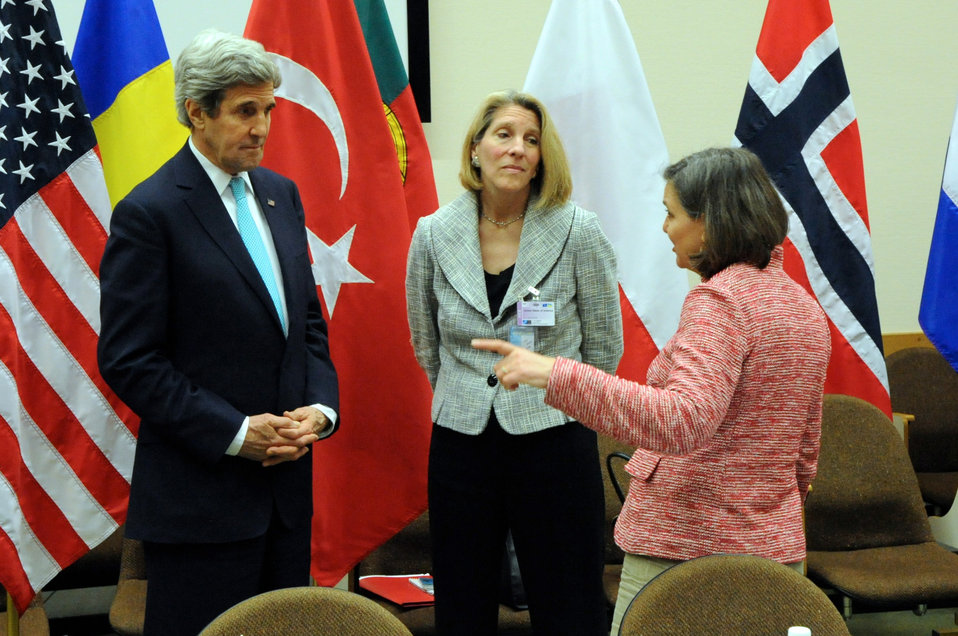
Secretary Kerry Speaks With Advisers Nuland, Donfried Before Meeting With Turkish Officials

U.S. Secretary of State John Kerry speaks with Assistant Secretary of State for European and Eurasian Affairs Toria Nuland and National Security Council Senior Director for European Affairs Karen Donfried before a bilateral meeting with Turkish officials on the margins of a NATO Ministerial Meeting in Brussels, Belgium, on April 1, 2014.